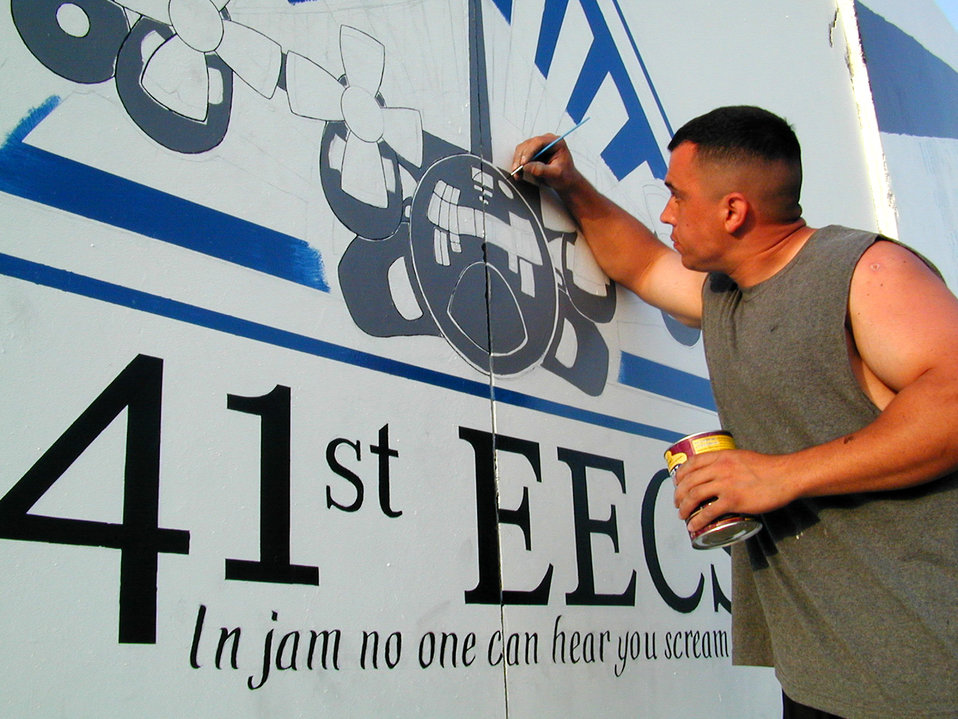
Art signals jammer's role in OEF

OPERATION ENDURING FREEDOM -- Staff Sgt. John Alsvig touches up his painting of an EC-130H on a mural documenting his unit's arrival on the frontlines of the war on terrorism. Alsvig is a fuels system specialist from the 41st Expeditionary Electronic Combat Squadron.